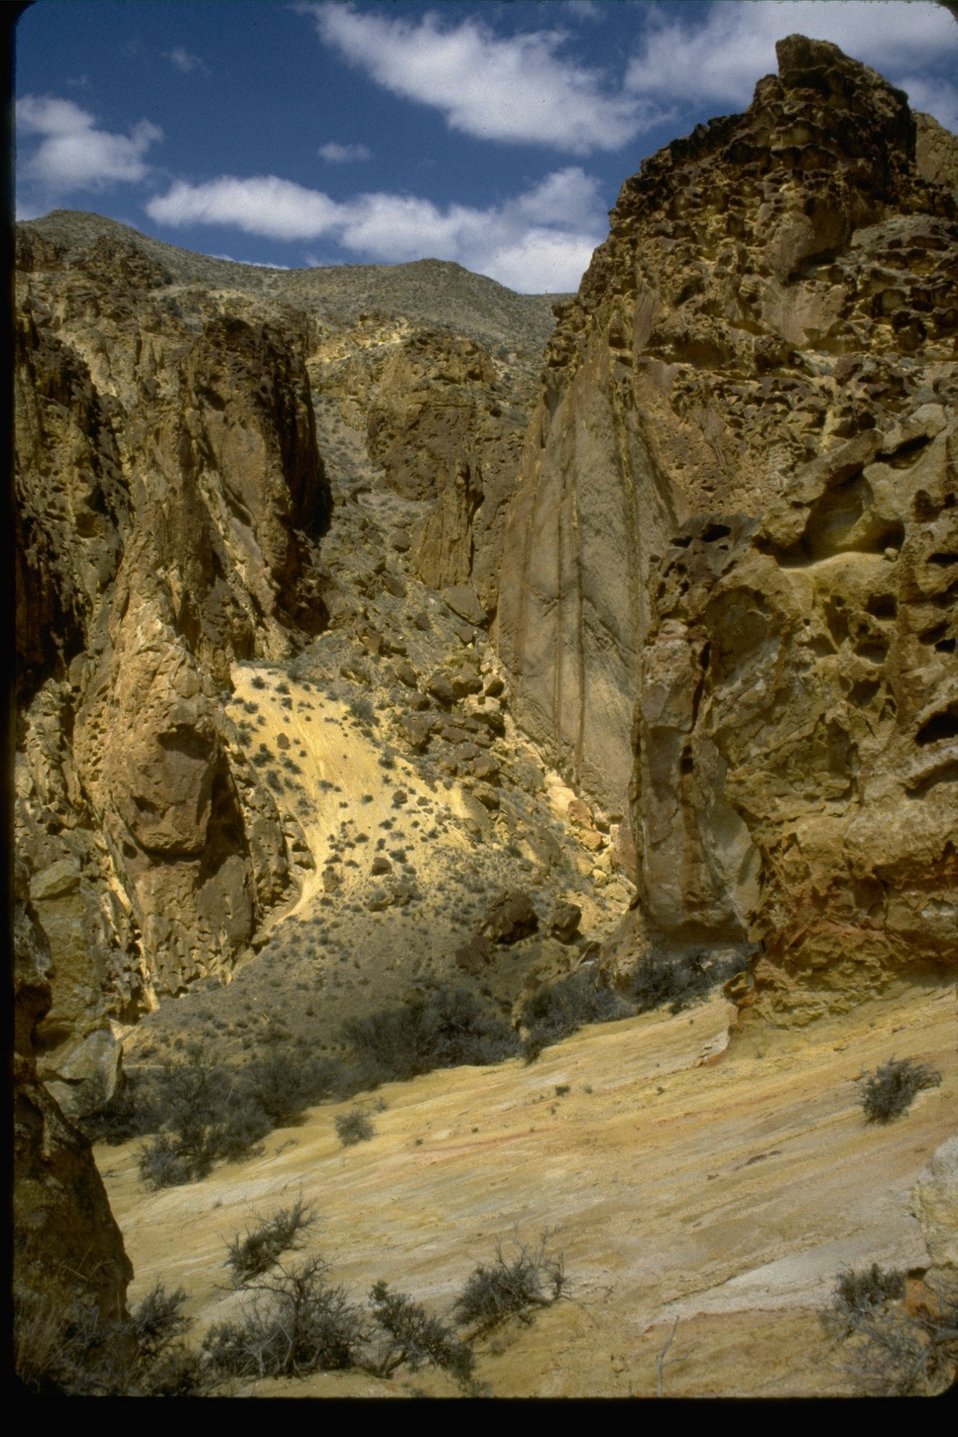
The steep rocky cliffs at the Honeycombs Wilderness Study Area. OR 3-77A.